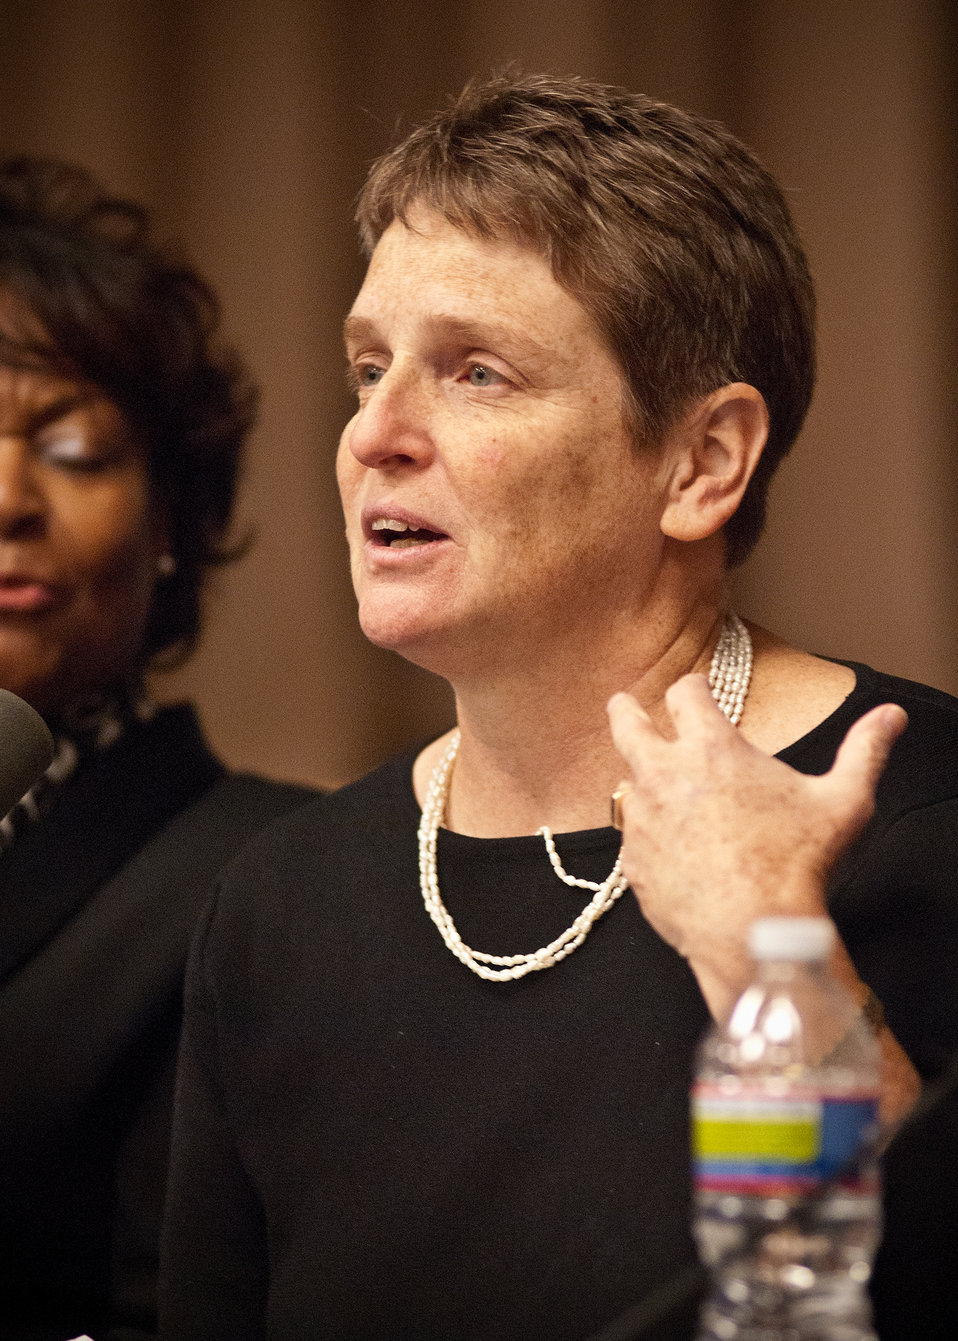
Robin Heard, Deputy Assistant Secretary for Administration a member of the USDA Panel of Success: Hiring and Employing Individuals with Disabilities offers her experience and advice to U.S. Department of Agriculture employees during National Disability Employment Awareness Month event in Washington, DC, on Wednesday, October 5, 2011. Agriculture Secretary Tom Vilsack is dedicated to establishing the USDA as the lead Federal agency in employing individuals with disabilities. The theme for the event is “Profit by Investing in Workers with Disabilities.” USDA is committed to ensuring that all our programs are accessible and inclusive of individuals with disabilities.